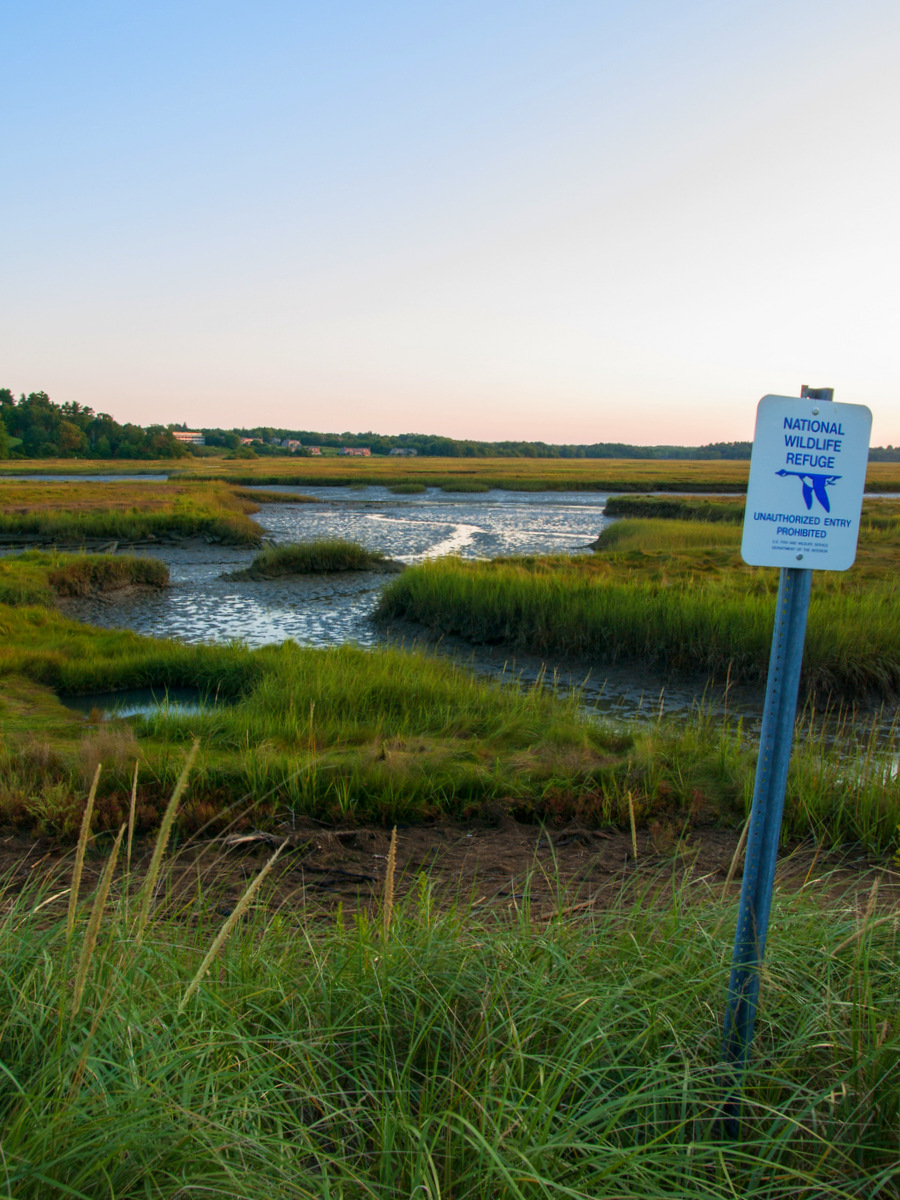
Tidal Marsh

Photographed at Rachel Carson National Wildlife Refuge.